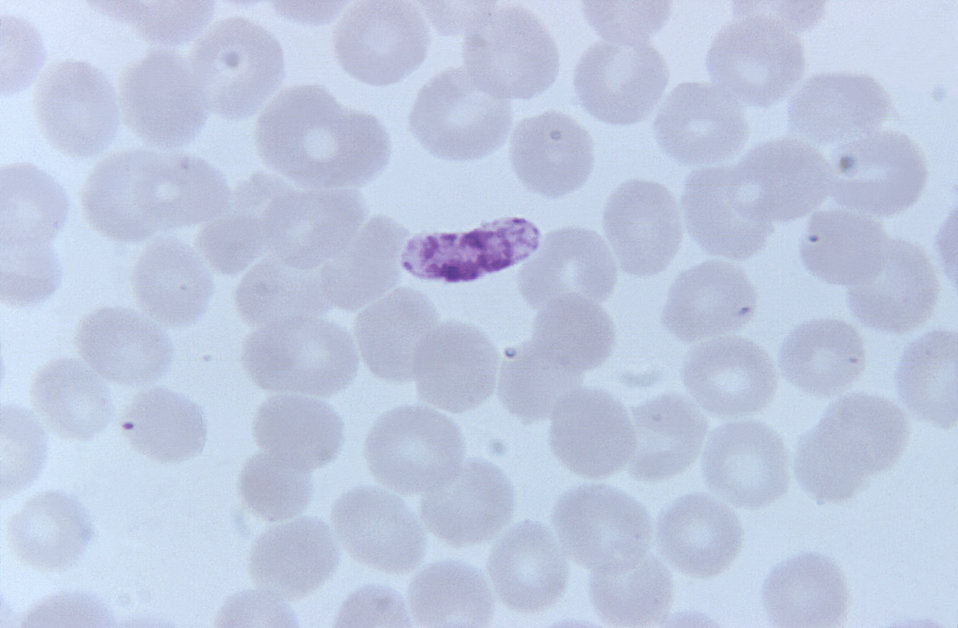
Magnified 1125X, this thin-film, Giemsa-stained photomicrograph shows how fused platelets can resemble a Plasmodium falciparum gametocyte.